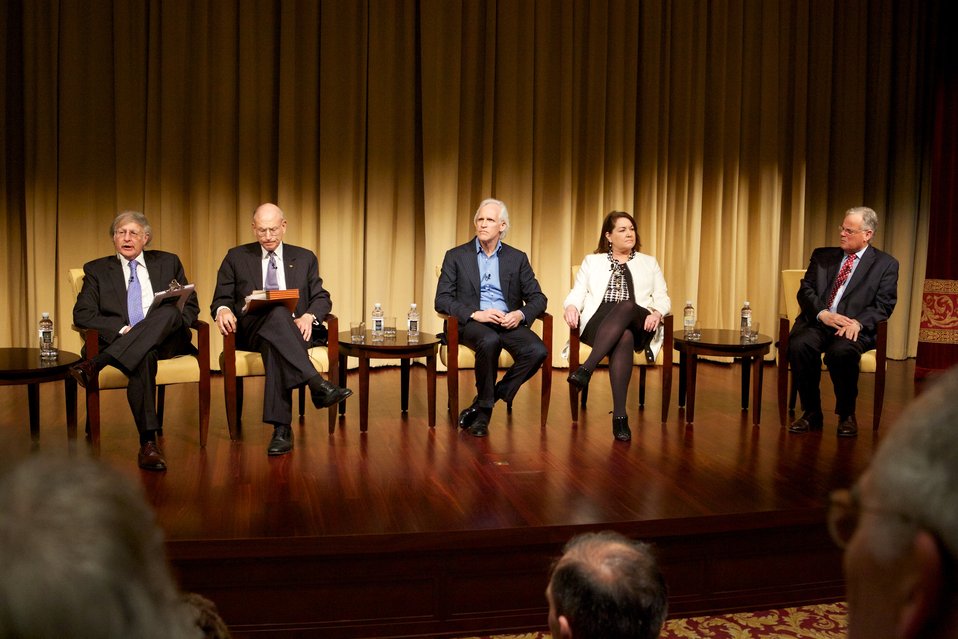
The Monuments Men; Greg Bradsher (left), archivist, moderates the discussion of Nazi looting and the Monuments, Fine Arts, and Archives section with panelists: Ambassador Stuart E. Eizenstat (2nd from left), former Special Representative of the President and Secretary of State on Holocaust-Era Issues, Robert M. Edsel (center), author, Nancy H. Yeide (2nd from right), Head of the Department of Curatorial Records at the National Gallery of Art, and Michael J. Kurtz (right), former Assistant Archivist for Records Services